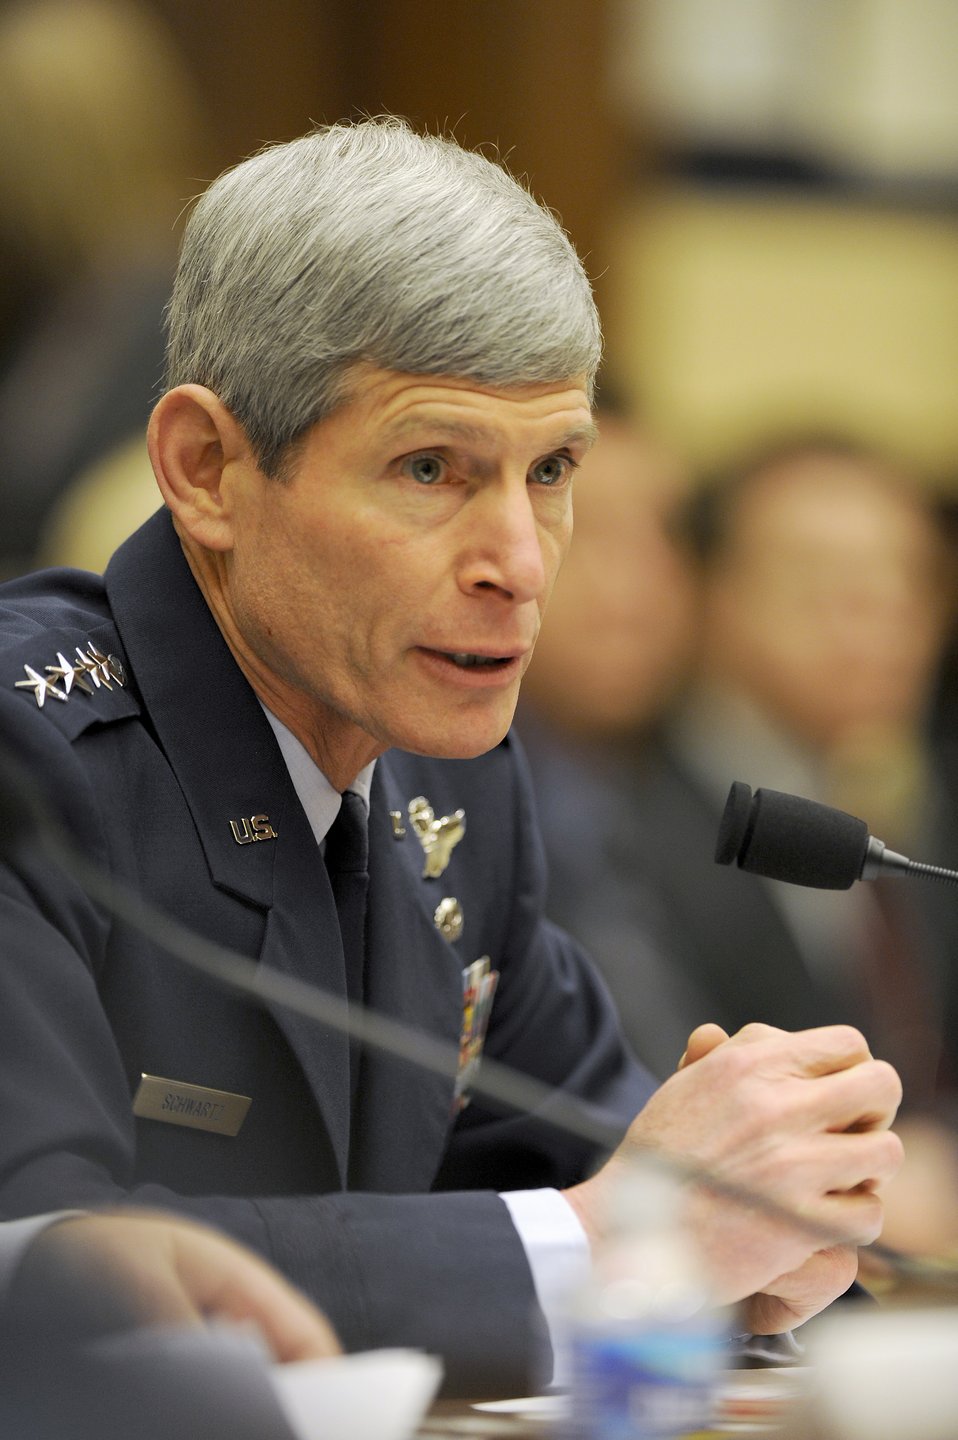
Chief of staff's testimony addresses 'Don't Ask, Don't Tell' repeal initiative

Air Force Chief of Staff Gen. Norton Schwartz serves as a witness before the House Armed Services Committee Feb. 23, 2010, in the Rayburn House Office Building on Capitol Hill. Both General Schwartz and Secretary of the Air Force Michael Donley answered questions that heavily leaned toward the status of the F-35 Lightning II joint strike fighter program, alignment with allies in future aircraft development, force readiness and the service's position on the review of the